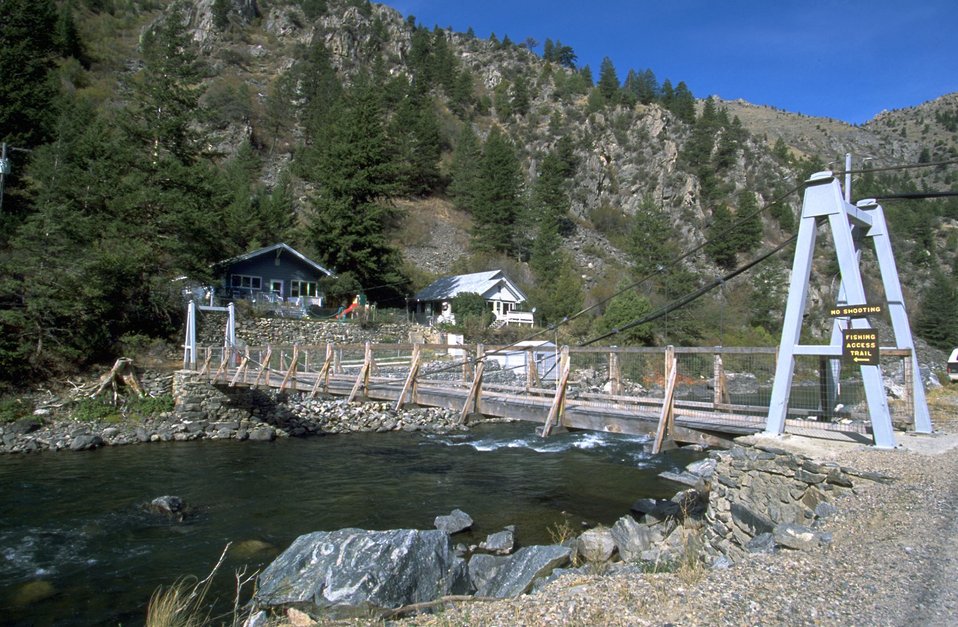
Powerhouse Foot Bridge - Caretaker Houses in background at Bear Trap